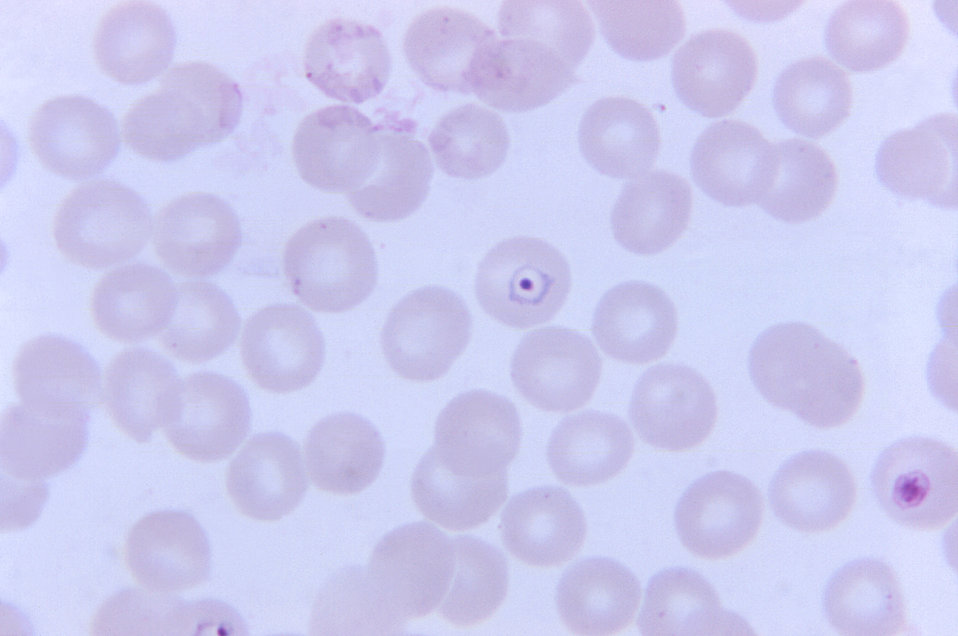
This thin film micrograph depicts a P. vivax ring with a chromatin mass in its center, using Giemsa stain; Mag. 1125X.